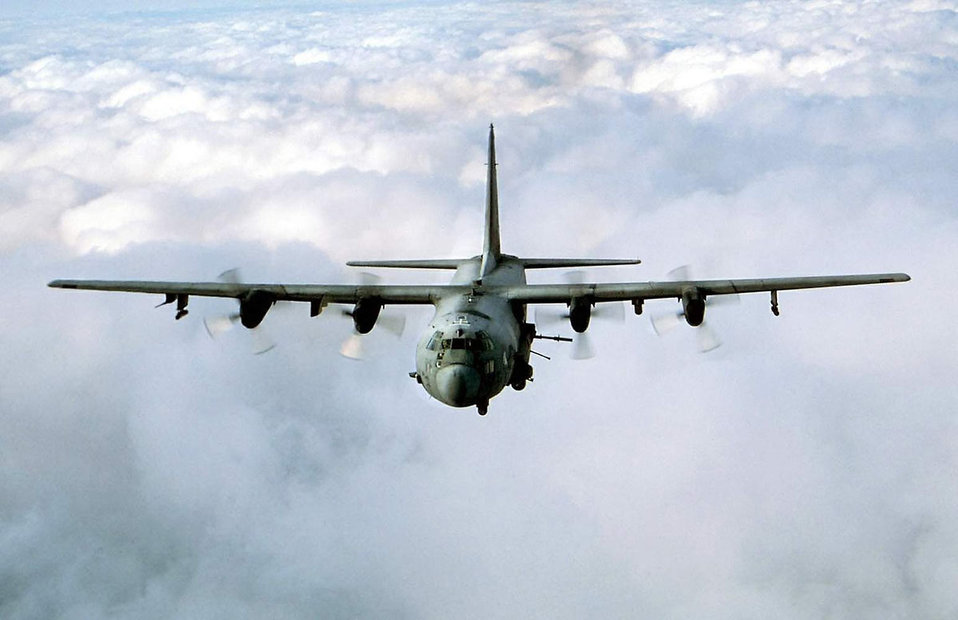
AC-130 Gunship

The AC-130 gunship's primary missions are close air support, air interdiction and force protection. Missions in close air support are troops in contact, convoy escort and urban operations. Air interdiction missions are conducted against preplanned targets or targets of opportunity. Force protection missions include air base defense and facilities defense.